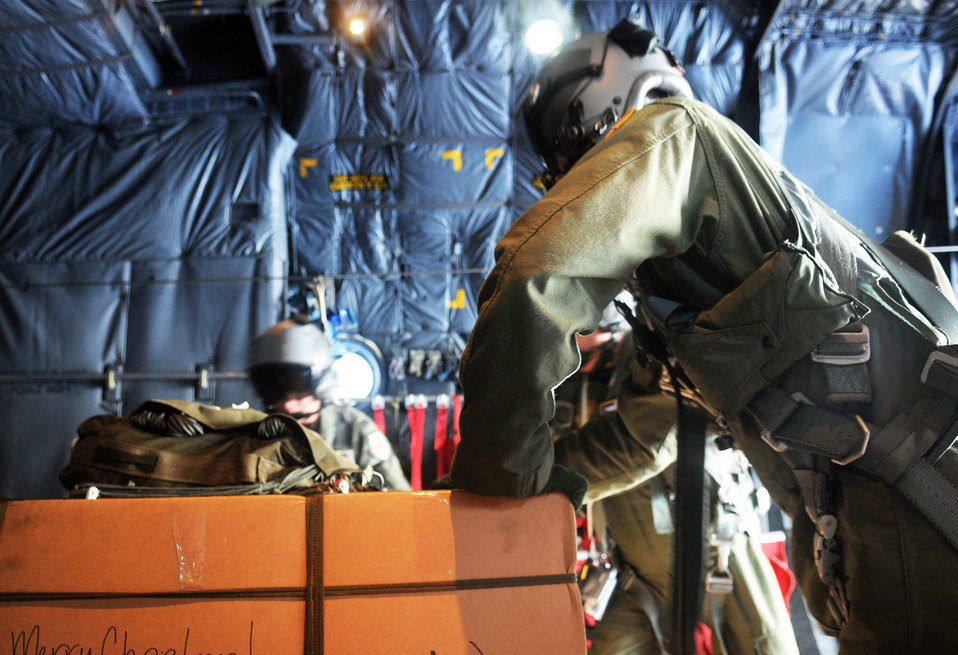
Airmen drop donated goods to Islanders

Members of the 36th Airlift Squadron prepare a pallet of boxed donations to be dropped on the Chuuk Islands as part of Operation Christmas Drop Dec. 16, 2009. Operation Christmas Drop is a non-profit organization powered by volunteers from Andersen Air Force Base and the local Guam community. Airmen today continue the tradition delivering supplies to remote islands of the Northern Marianas.